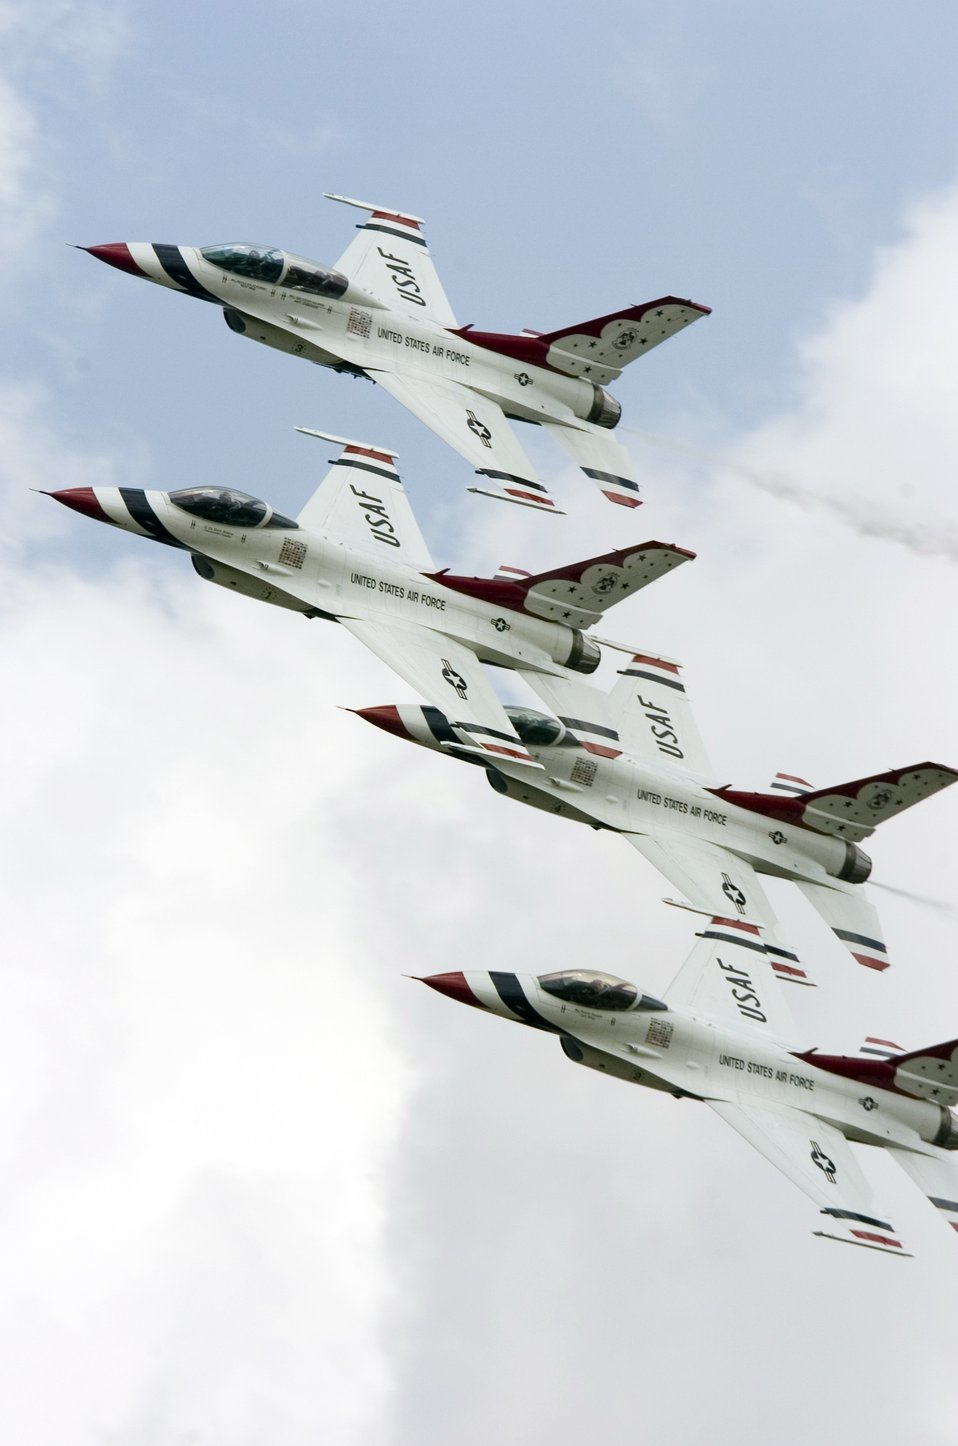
Thunderbirds

The Thunderbird